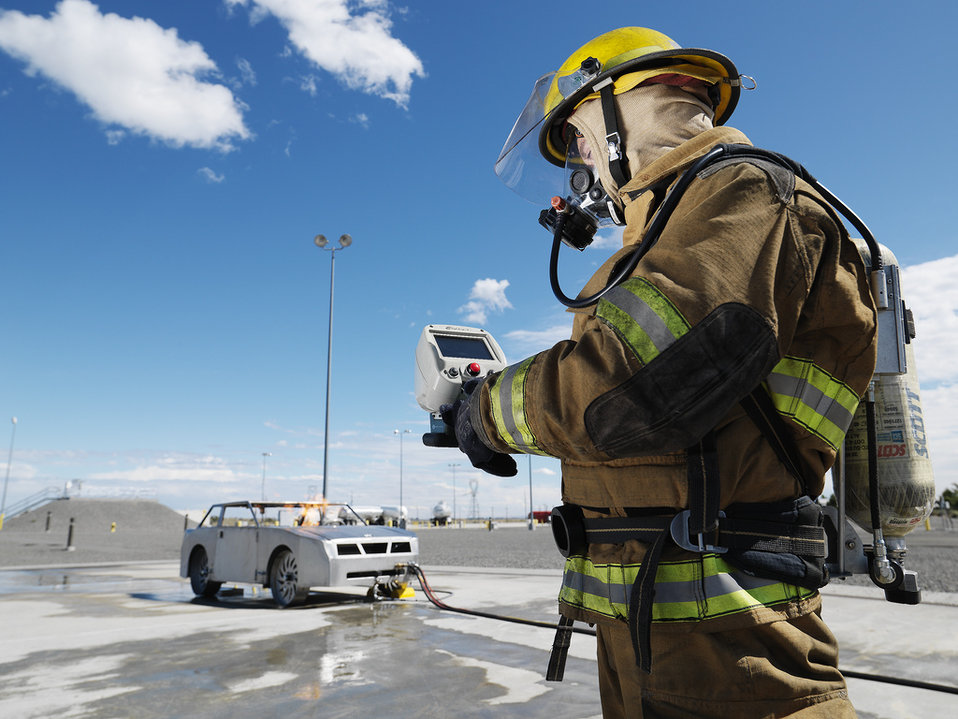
The Fire and Safety Officials Hydrogen Safety Training Program supports future development of a training program for fire and safety officials. Since hydrogen is colorless, odorless, burns with a nearly invisible flame, and gives off relatively little radiant heat, a hydrogen fire is often difficult to detect without specialized equipment and training.